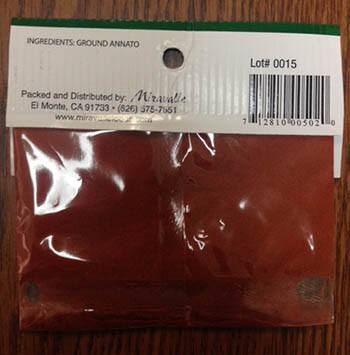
RECALLED – Ground Annato

April 23, 2014 – Product Recall – Miravalle Foods, Inc. Recalls Ground Annato Because of Possible Health Risk.